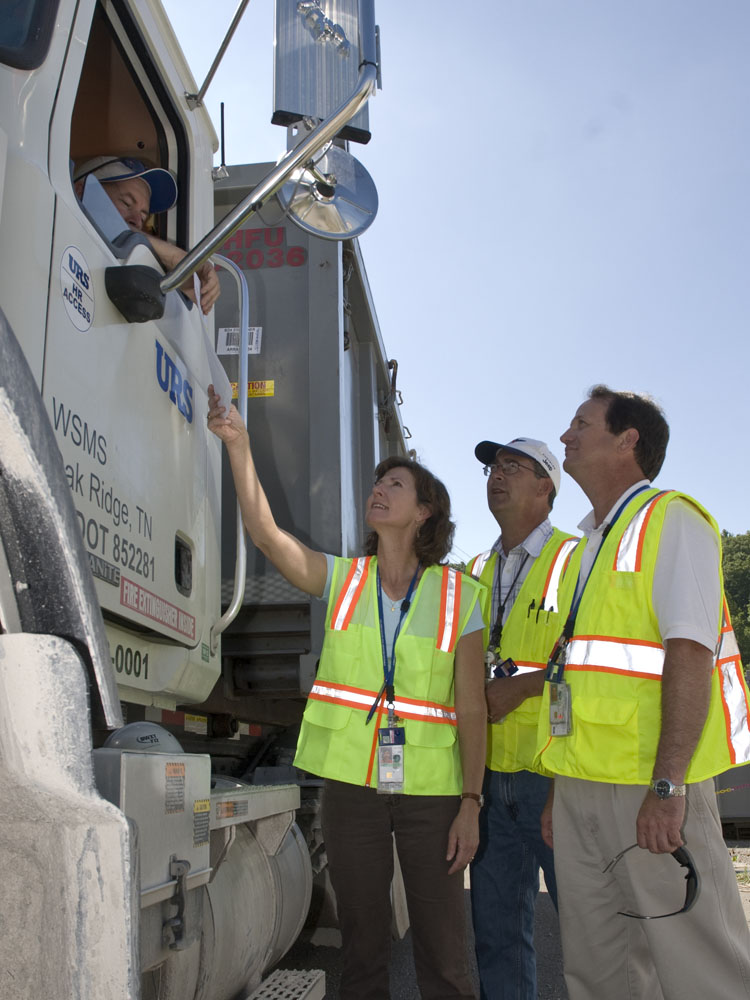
Skilled Workers Bruised by Recession Find New Start in Oak Ridge Recovery Act Work

Efforts to clean up waste from the Manhattan Project and the Cold War are under way at the Y-12 National Security Complex. The seven projects there funded by $216 million from the Recovery Act are providing work for more than 1,500 Americans, many of whom had struggled in the recent recession.

In addition to the work at Alpha 5 and Beta 4, Recovery Act projects at Y-12 include the West End Mercury Area storm sewer cleanup project, removal of soil contaminated with mercury, and the cleanup of a 7-acre scrap yard. In January 2011, Recovery Act workers completed the demolition of Building 9211 at Y-12, which reduced the footprint of the Cold War legacy by more than 83,000 square feet.